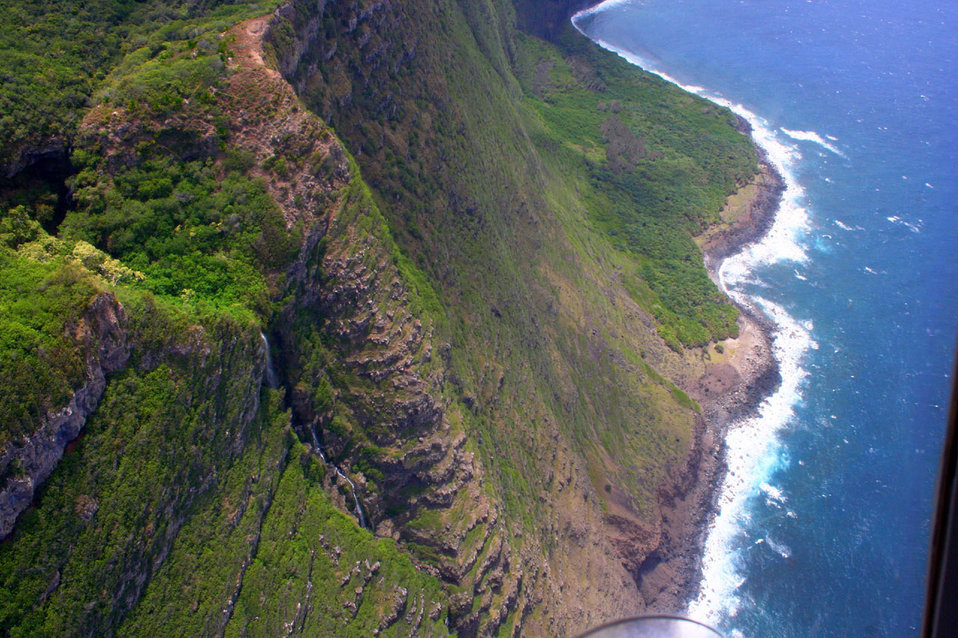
Top of highest cliffs in the world

Taken from a helicopter at the top of the cliffs on molokai.